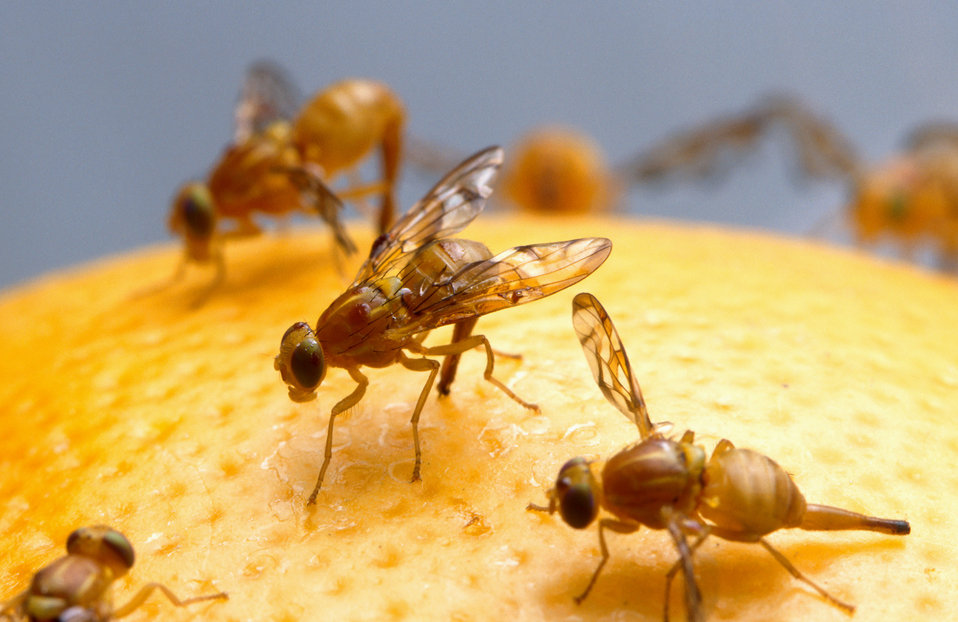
In grapefruit as well as many other fruits, one female Mexican fruit fly can deposit up to 40 eggs at a time, 100 or more a day, and about 2,000 over her life span.